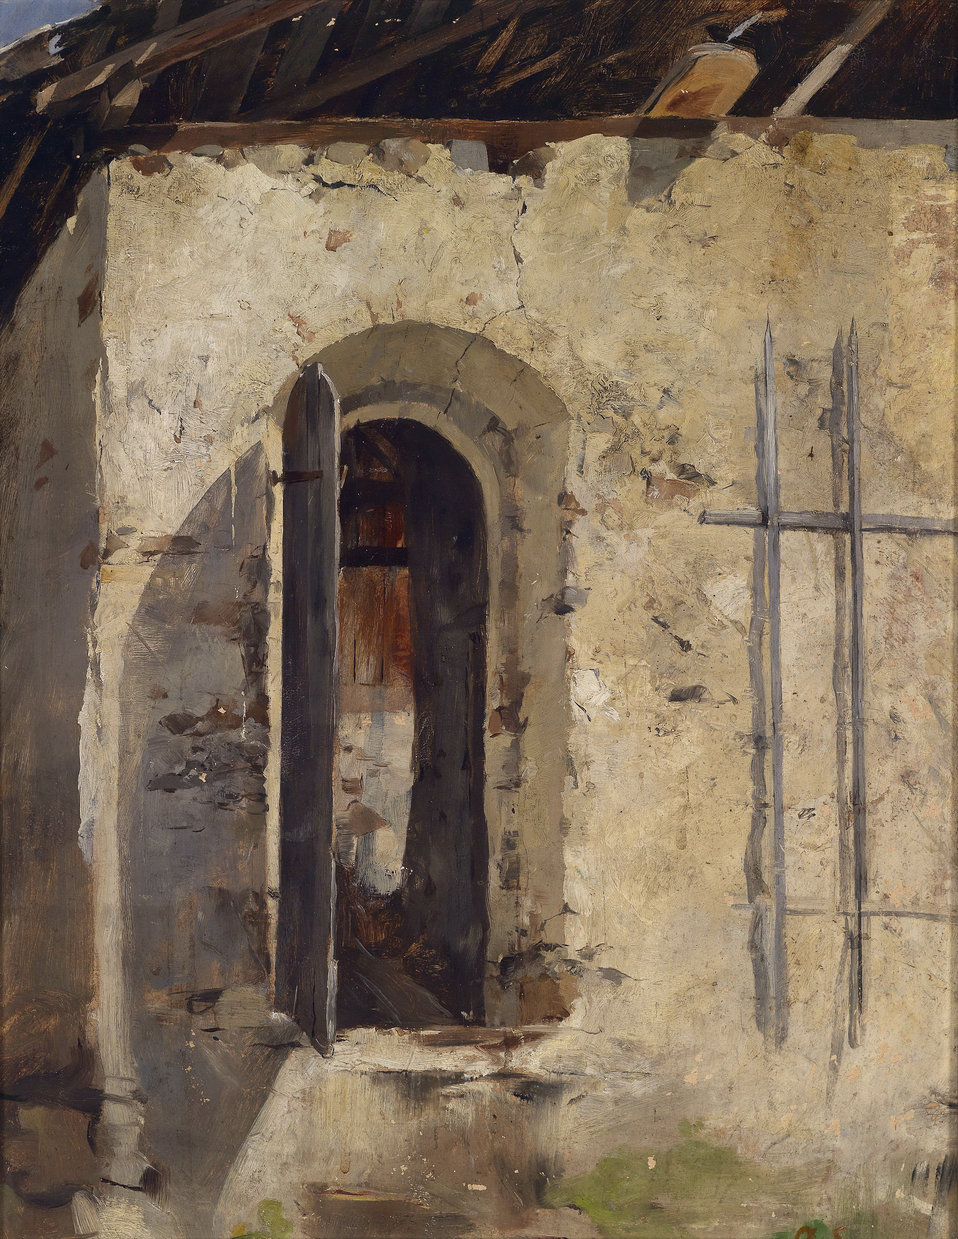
Deutsch: “Das Tor” (Kornkasten der Tammerburg bei Lienz), um 1890, signiert A. Egger, Öl auf Karton, 50,8 x 39,5 cm